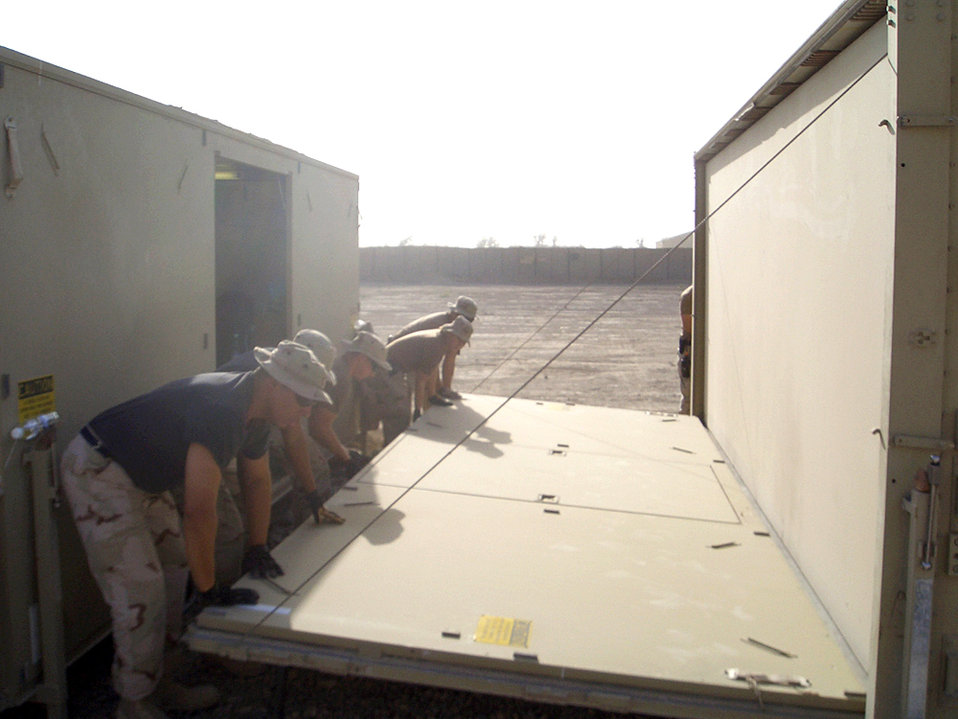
Operation Iraqi Freedom

ALI BASE, Iraq -- Airmen lower the floor panel and vertical wall that supports the roof and ties the side walls of an expandable storage container. The new container is part of the recent expansion of the base medical clinic here.